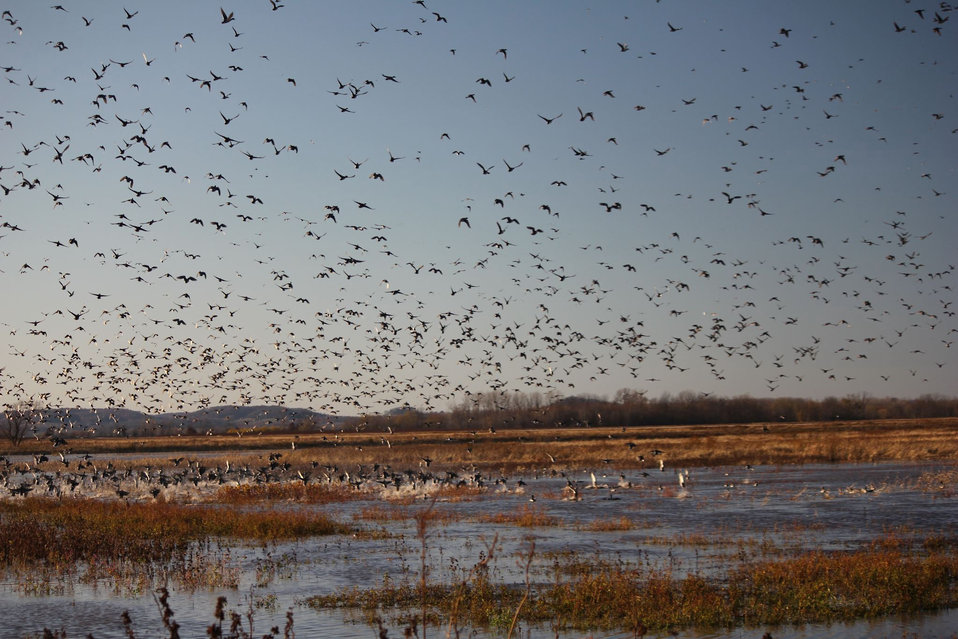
fall migration at Clarence Cannon NWR

Clarence Cannon National Wildlife Refuge, MO
November 2011